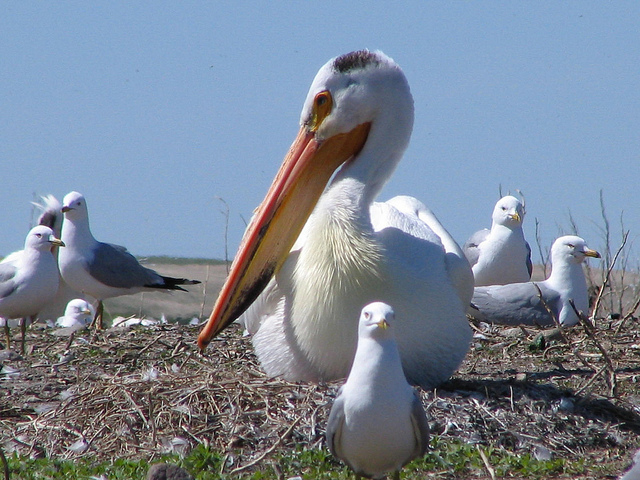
White pelicans

Chase Lake National Wildlife Refuge/USFWS